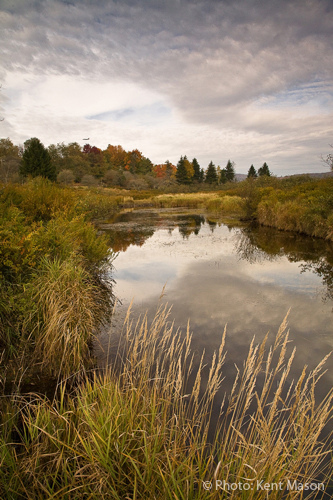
Jetstream